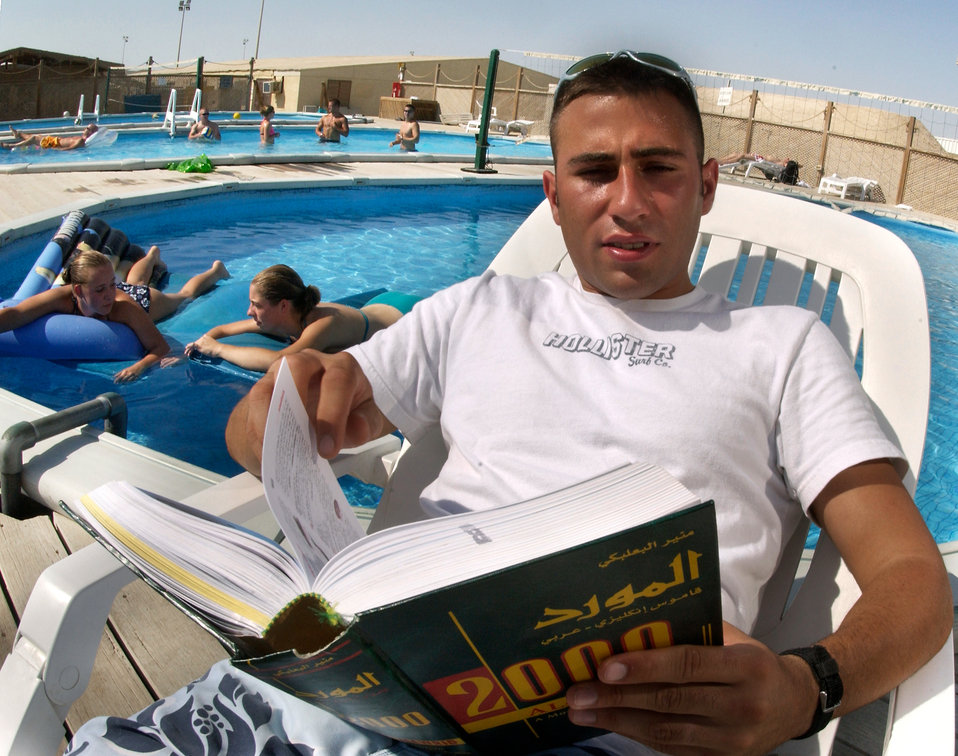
Poolside reading

SOUTHWEST ASIA -- Airman 1st Class Ramin Amely sits poolside and reads a Farsi-English dictionary at an undisclosed desert location. He is assigned to the 380th Expeditionary Security Forces Squadron. His language skills help his unit work with host-nation patrols to guard the base.